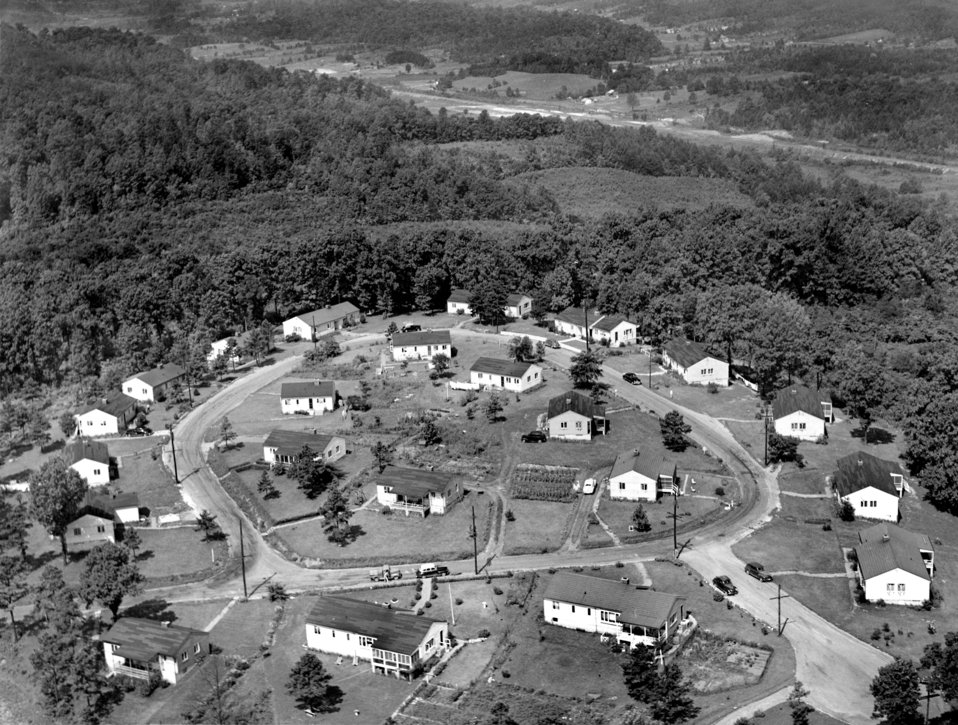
Air View Ogden Circle Homes 1948 Oak Ridge

5116 DOE photo Ed Westcott 7-12-1948 Oak Ridge Tennessee